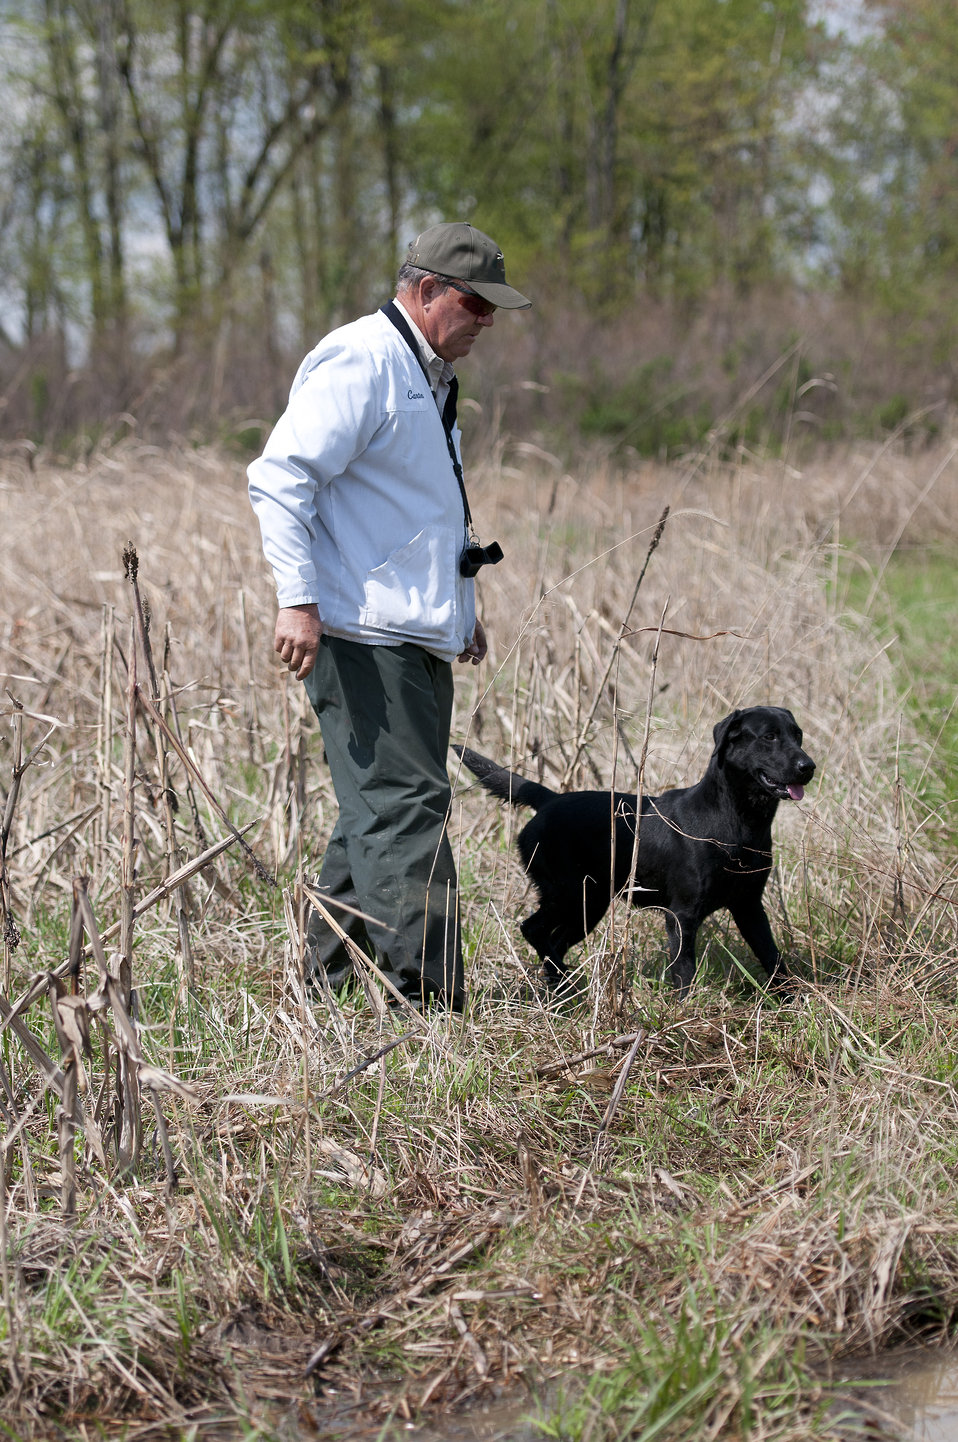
New Signs Direct Recreational Use of Land at DOE’s Paducah Site

New signs are intended to help the public understand the expanded use of public recreational and hunting activities on 1,986 acres of Department of Energy-owned land around the Paducah Gaseous Diffusion Plant.

The changes took effect Jan. 1 after DOE signed a new five-year license agreement with the Kentucky Department of Fish and Wildlife Resources for expanded use of DOE’s portion of the West Kentucky Wildlife Management Area (WKWMA).

Posted in May, the new signs replace yellow DOE no-trespassing signs and require people to check in daily at the WKWMA clubhouse before they use the land. Visitors are instructed to use one of three check-in boxes to fill out basic information cards and drop them in the lower part of the box.